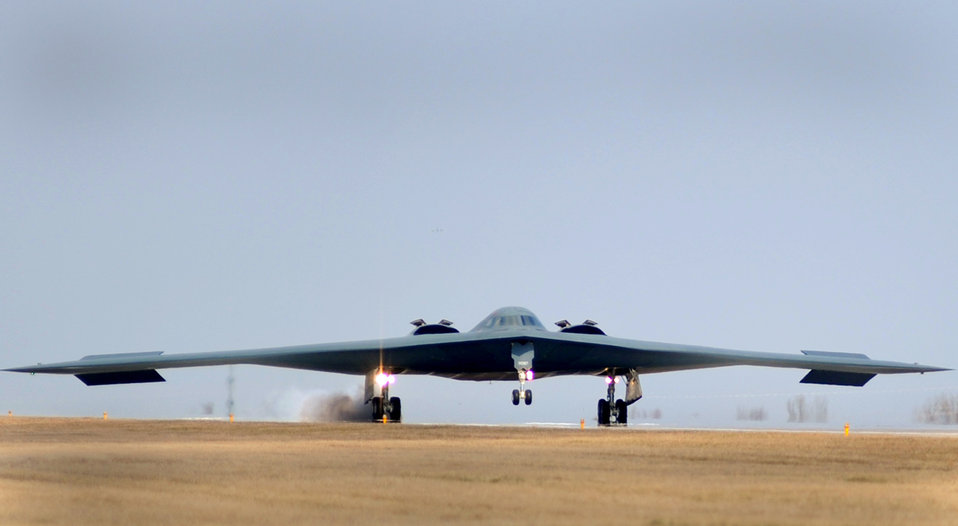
Operation Odyssey Dawn

WHITEMAN AIR FORCE BASE A B-2 Stealth bomber returns from a mission March 20, 2011.